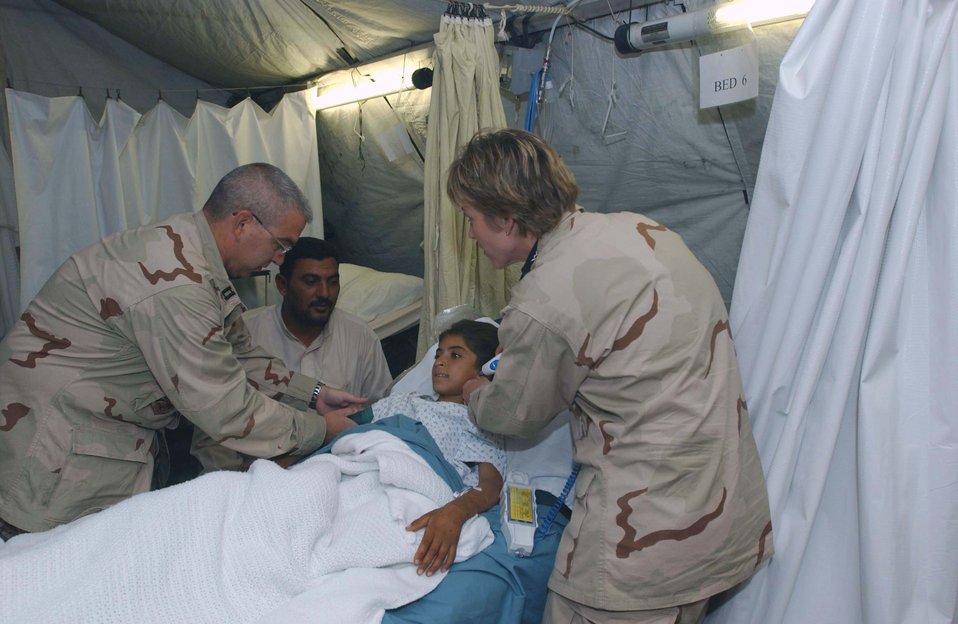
Deployed medics save Iraqi child

TALLIL AIR BASE, Iraq -- Capts. Robert Hayes and Jeannette Ward monitor 8-year-old Nahida under the watchful eyes of her father, Nafl Radi. The young Iraqi girl was bitten by a venomous snake and treated at the medical facilities here. The Airmen are nurses with the 407th Expeditionary Medical Group.